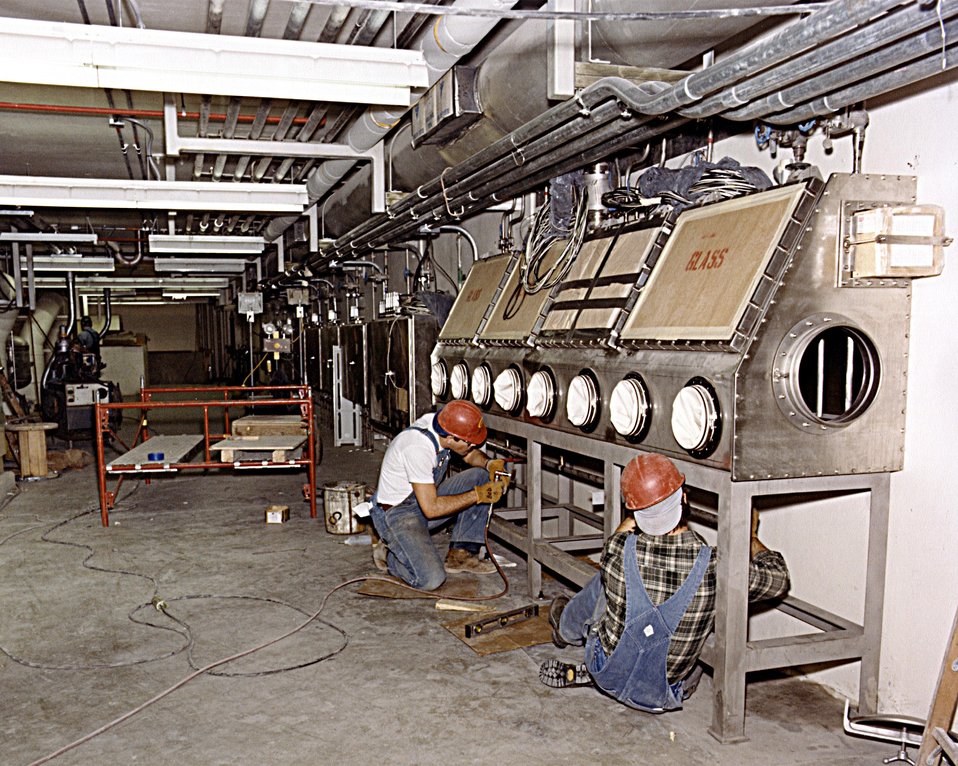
WORKERS ASSEMBLING EQUIPMENT IN THE CADMIUM HANDLING AREA.

THE FLUORINEL FACILITY WILL INCLUDE AREAS FOR THE RECEIPT, HANDLING, STORAGE, AND DISSOLUTION OF SPENT REACTOR FUEL. THE DISSOLVED SOLUTION WILL BE TRANSFERRED TO EXISTING FACILITIES AT THE IDAHO FUEL PROCESSING FACILITY FOR RECOVERY OF CONTAINED URANIUM. THE FACILITY WILL PROCESS A WIDE VARIETY OF SPENT FUELS, INCLUDING NAVAL, TEST, AND RESEARCH REACTOR FUELS, TO INCREASE THE AMOUNT OF URANIUM RESOURCE AVAILABLE TO THE UNITED STATES.